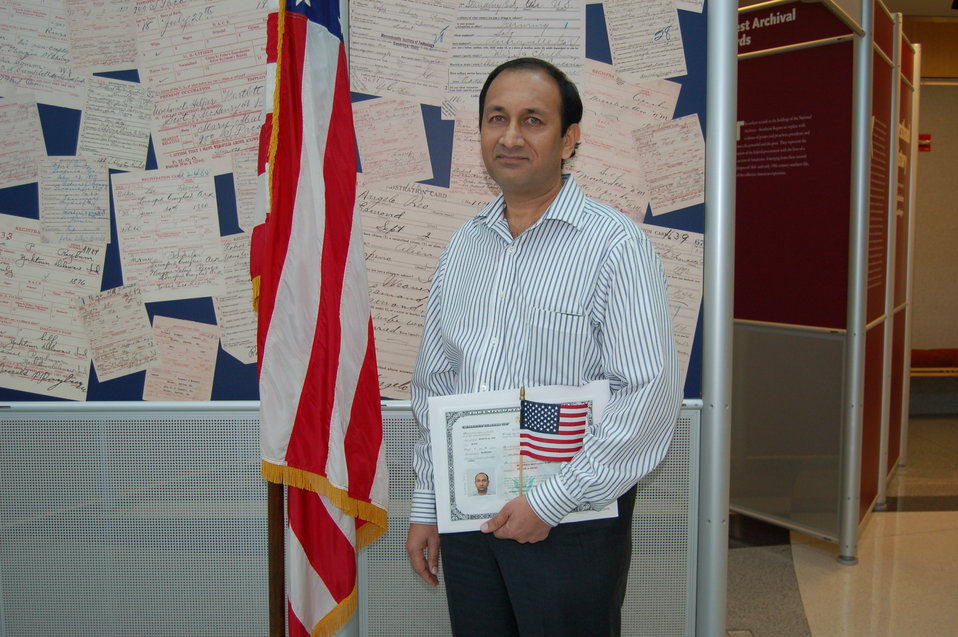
New Citizens